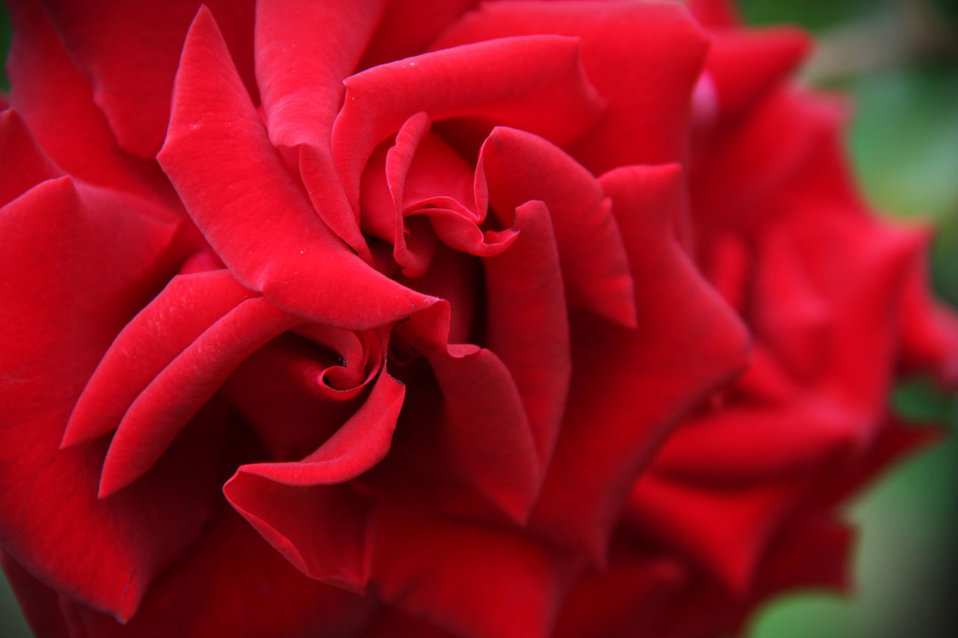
Red rose, red flowers.